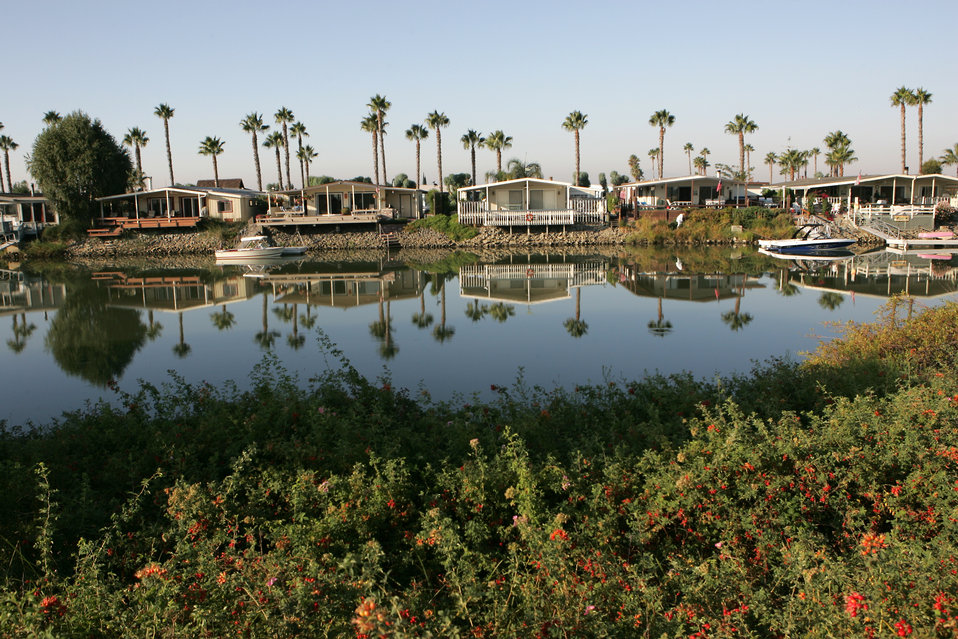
TYLER ISLAND,Calif.(Sept.7,2006)--Resort living on the delta in Tyler Island.The U.S. Army Corps of Engineers, Sacramento and San Francisco Districts, has multiple studies and projects addressing the mission areas of Ecosystem Restoration, Flood Risk Management, Navigation, and Watershed Planning within the Delta region. The study boundaries and mission areas of these ongoing projects sometimes coincide, complicating planning and coordination efforts. In addition to the projects undertaken by the Corps, numerous other Federal, State, and local efforts are underway. The key component to the success of each of these initiatives will involve sharing of information, cooperation, collaboration, and partnership.